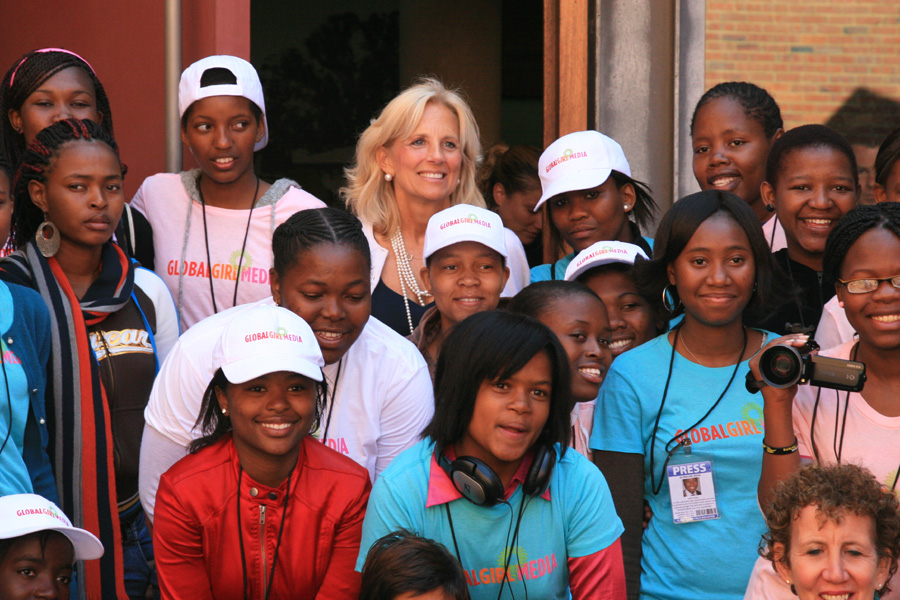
Dr. Jill Biden With South African Students

Dr. Jill Biden, wife of Vice President Joseph Biden poses for a photo with South African students at the Hector Pieterson Museum in Soweto, South Africa, on June 12, 2010.